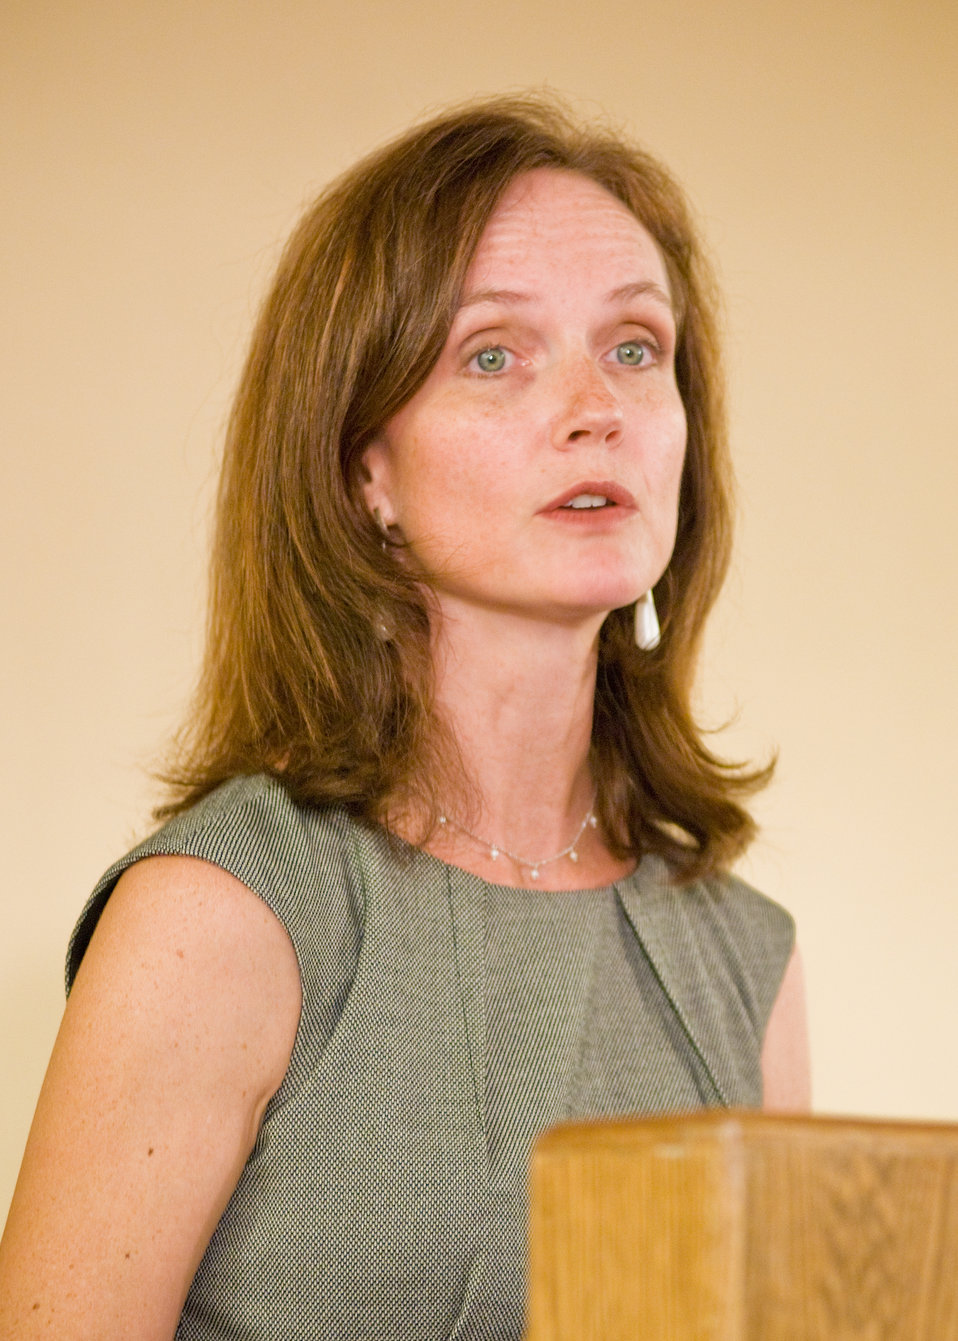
U.S. Department of Agriculture Undersecretary, Food Safety Dr. Elisabeth Hagen speaks to Food Safety Inspection Service employees at the 2010 FSIS Diversity Training Conference in Arlington, Virginia, Tuesday, August 31, 2010. The theme of the conference is 'Diversity in Thought, Unity in Purpose.' The reason for the conference is to improve civil rights for clients and employees. USDA Photo 10di1475-56 by Bob Nichols.